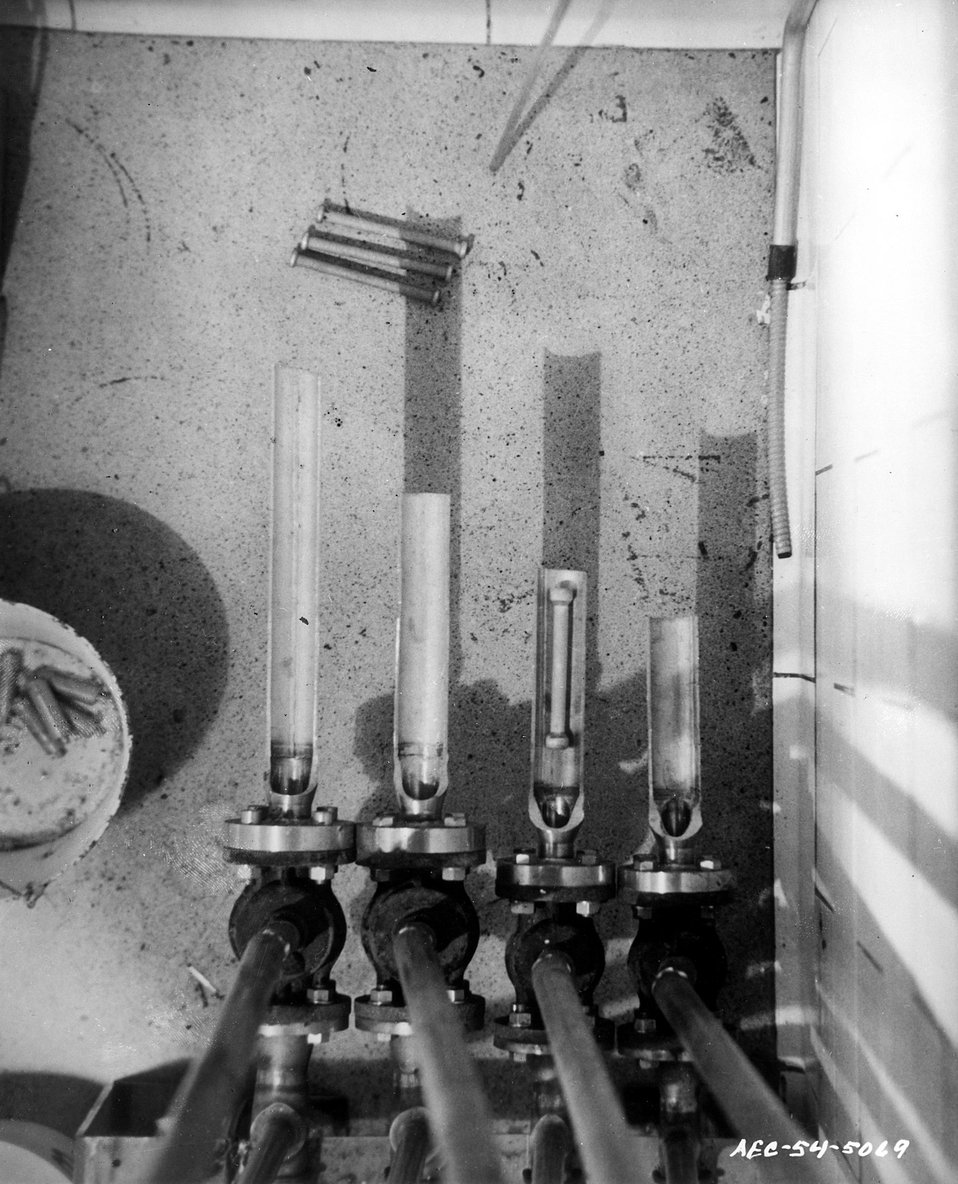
National Reactor Testing Station, Idaho... Looking into the canal under the reactor on the west side where the hydraulic 'rabbits' enter and leave the tubes conducting them up to the heart of the Materials Testing Reactor. Circa 1954.